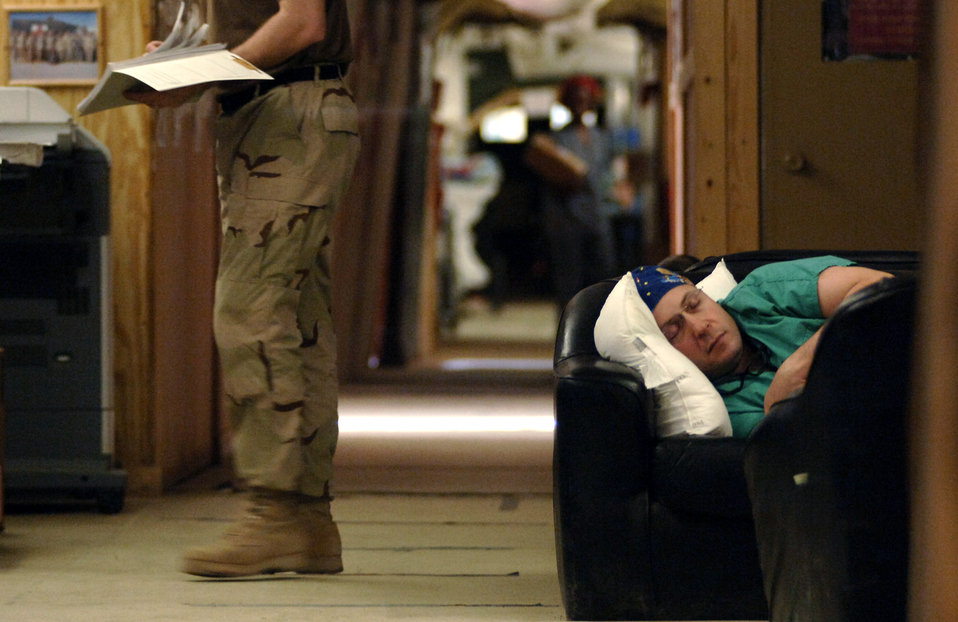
A hospital for heroes

Cardio-thoracic surgeon Lt. Col. (Dr.) Jerry Pratt takes advantage of down time Feb. 21 in a room adjacent to the emergency room in the Air Force Theater Hospital at Balad Air Base, Iraq. The hospital that owns a survival rate of 98 percent.